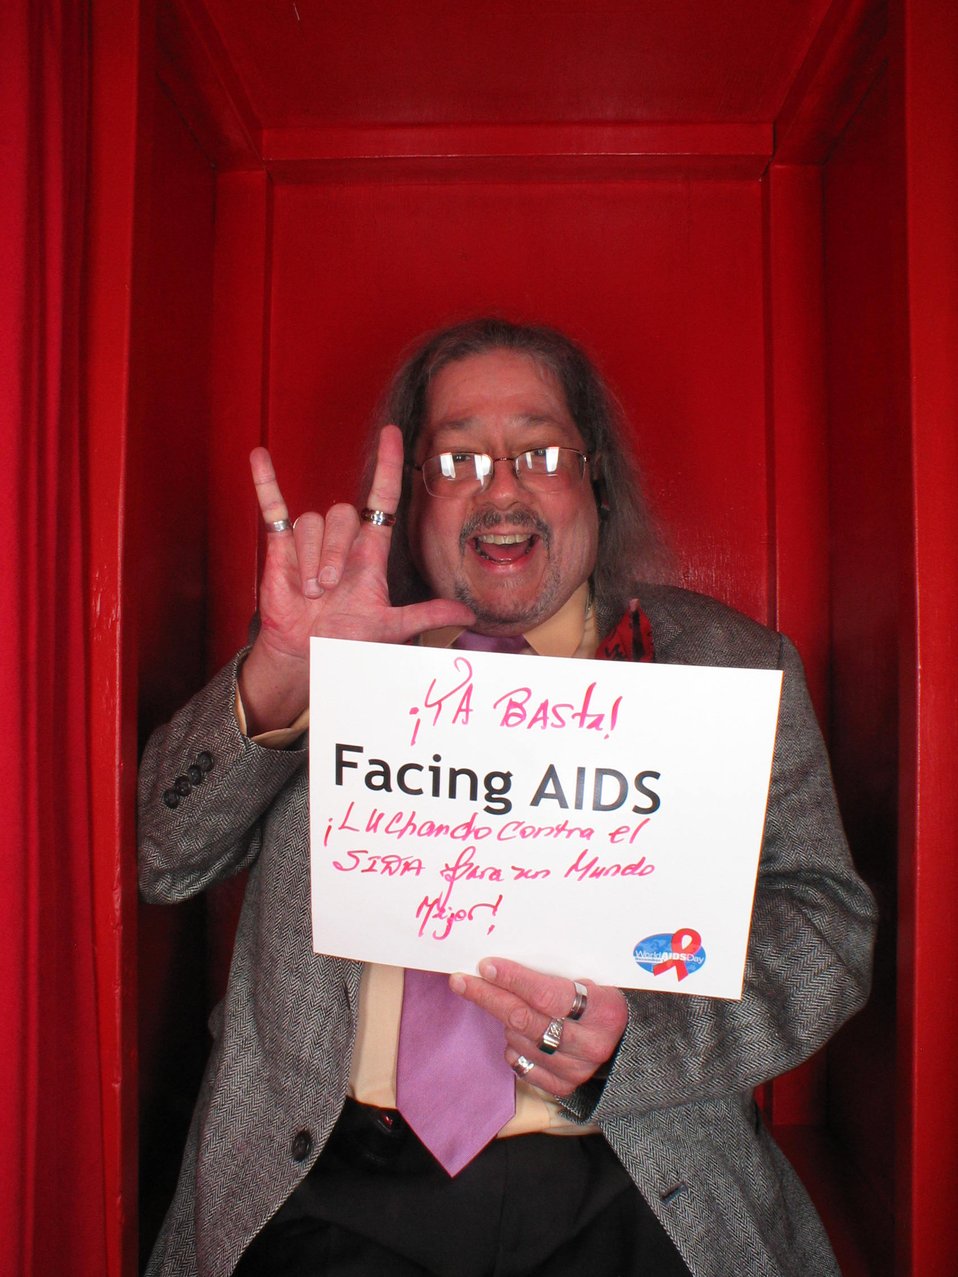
Ya Basta Facing AIDS luchando contra el SIDA para un Mundo mejor!